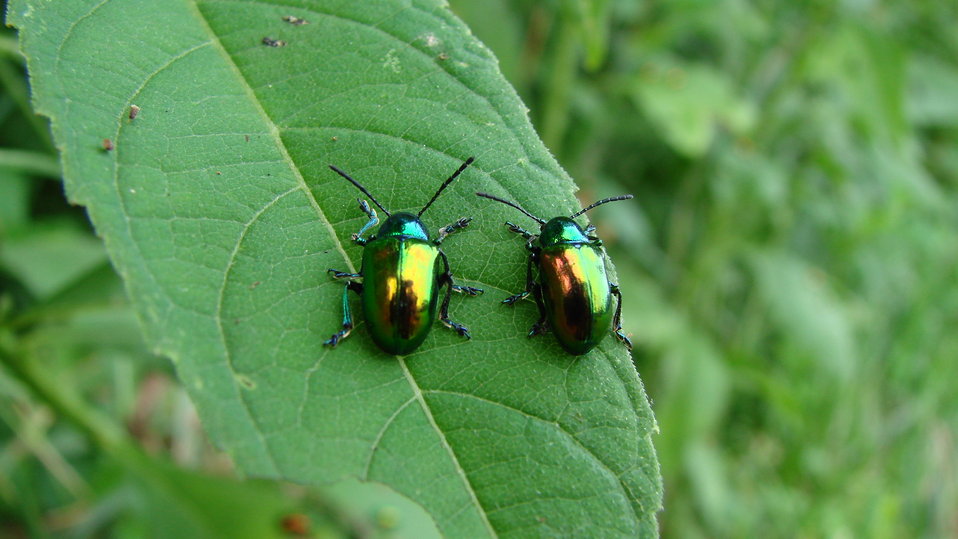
Dogbane beetle

Ohio River Islands National Wildlife Refuge, WV.